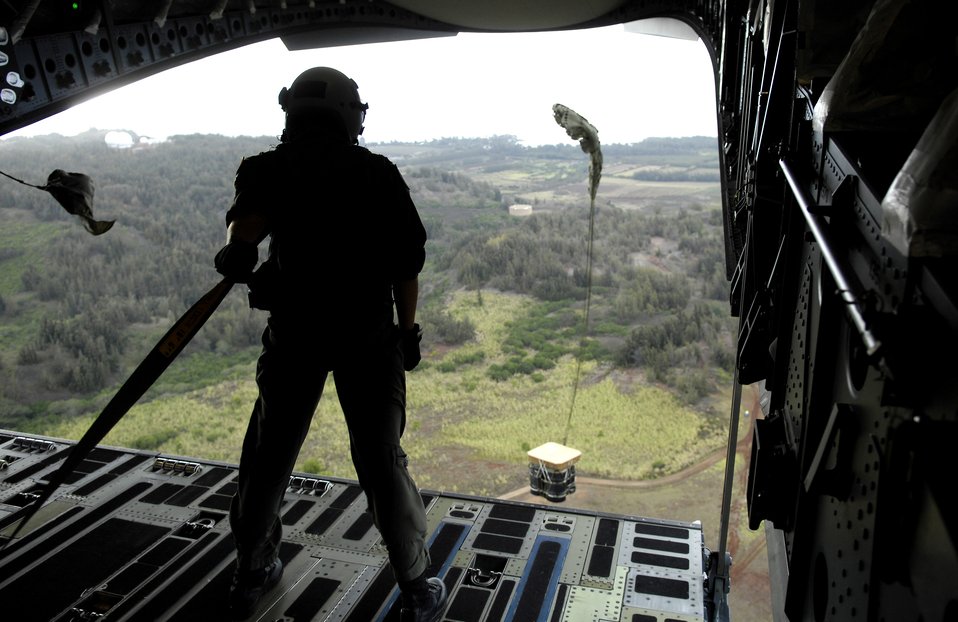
Airlift training

Capt. Stephanie Boff watches a practice bundle fall from a C-17 Globemaster III during an airdrop training mission July 16 over Hawaii. Captain Boff is a pilot with the 535th Airlift Squadron at Hickam Air Force Base, Hawaii.